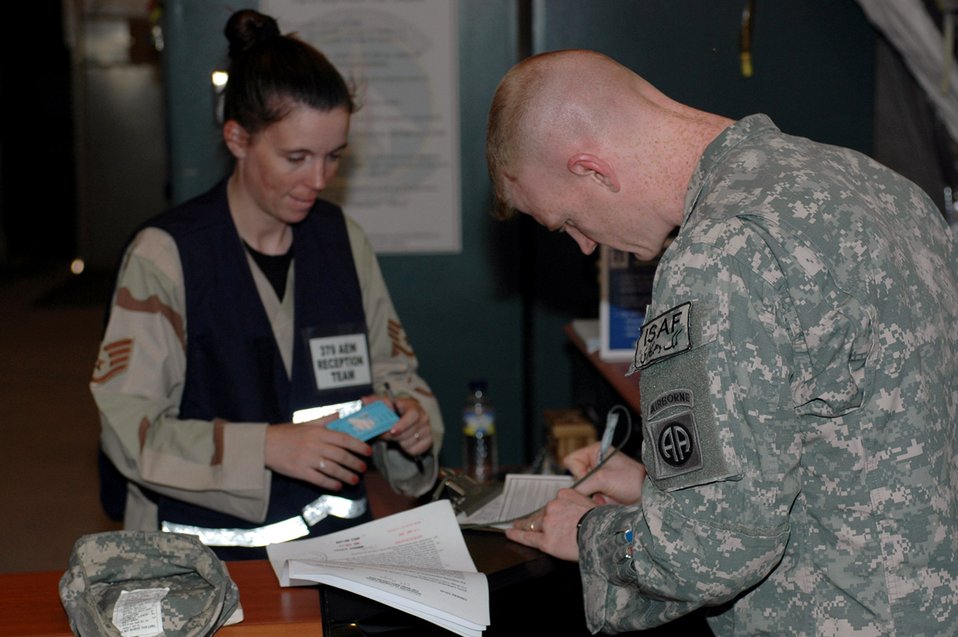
Team preps servicemembers heading to forward locations

Staff Sgt. Laura Fournier assists Army Capt. Samuel Morgan who has just arrived at this Southwest Asia air base. Sergeant Fournier, the 379th Expeditionary Services Squadron lodging supervisor, serves on the reception control team to provide assistance to transient personnel moving on to other duty locations. Reception control team members wear blue vests for easy identification.